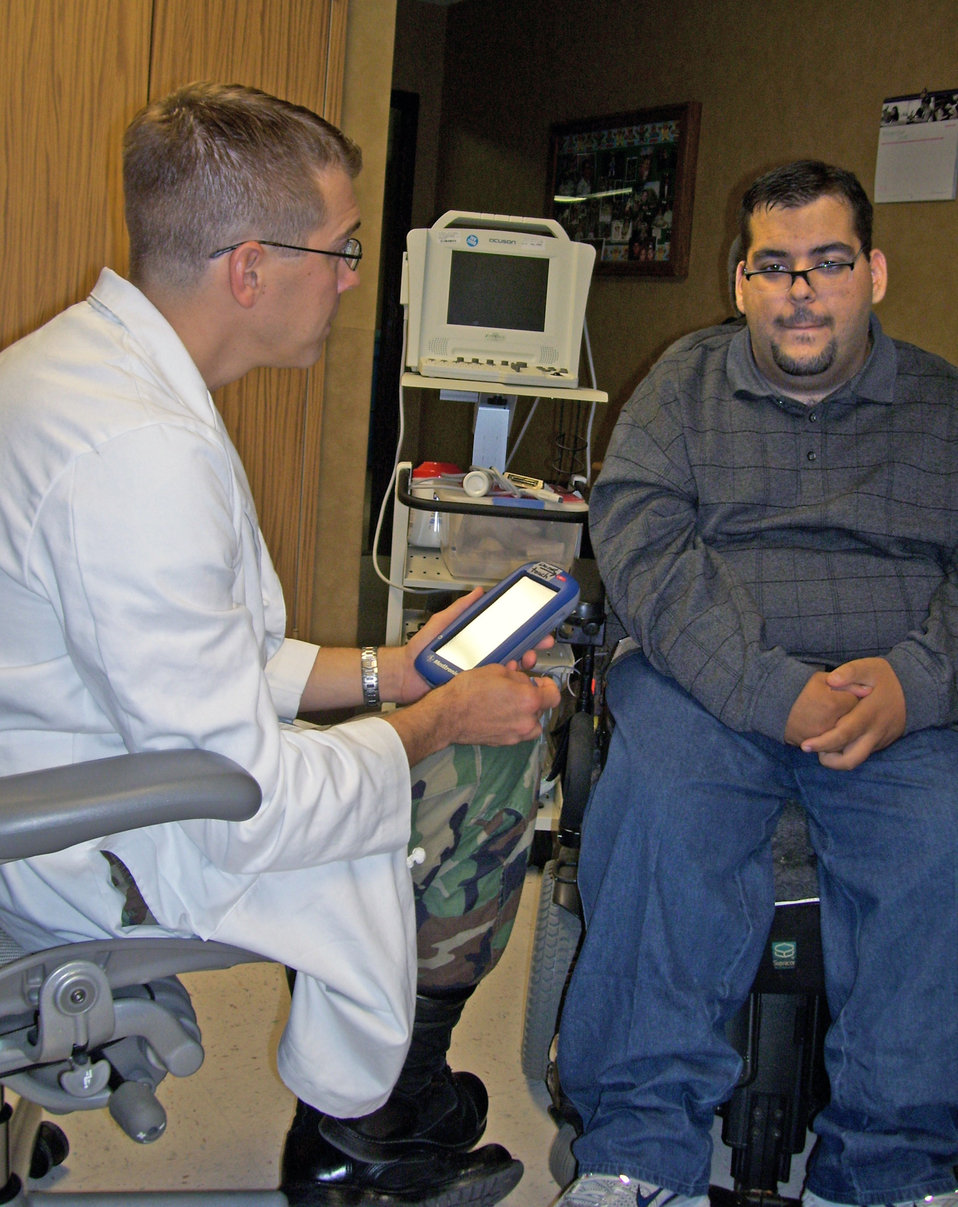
Clinic treats adults, children for cerebral palsy

Maj. (Dr.) Brian Faux (left) adjusts the settings on Andy Smith's implanted pump Nov. 12 at the San Antonio Military Medical Complex. The pump was implanted in July 2008 to help control cerebral palsy symptoms and has resulted in increased motor activity. Dr. Faux, a pediatric neurologist, makes slow, subtle adjustments to his levels every week and it usually takes about six months to a year to get patients to the right levels.